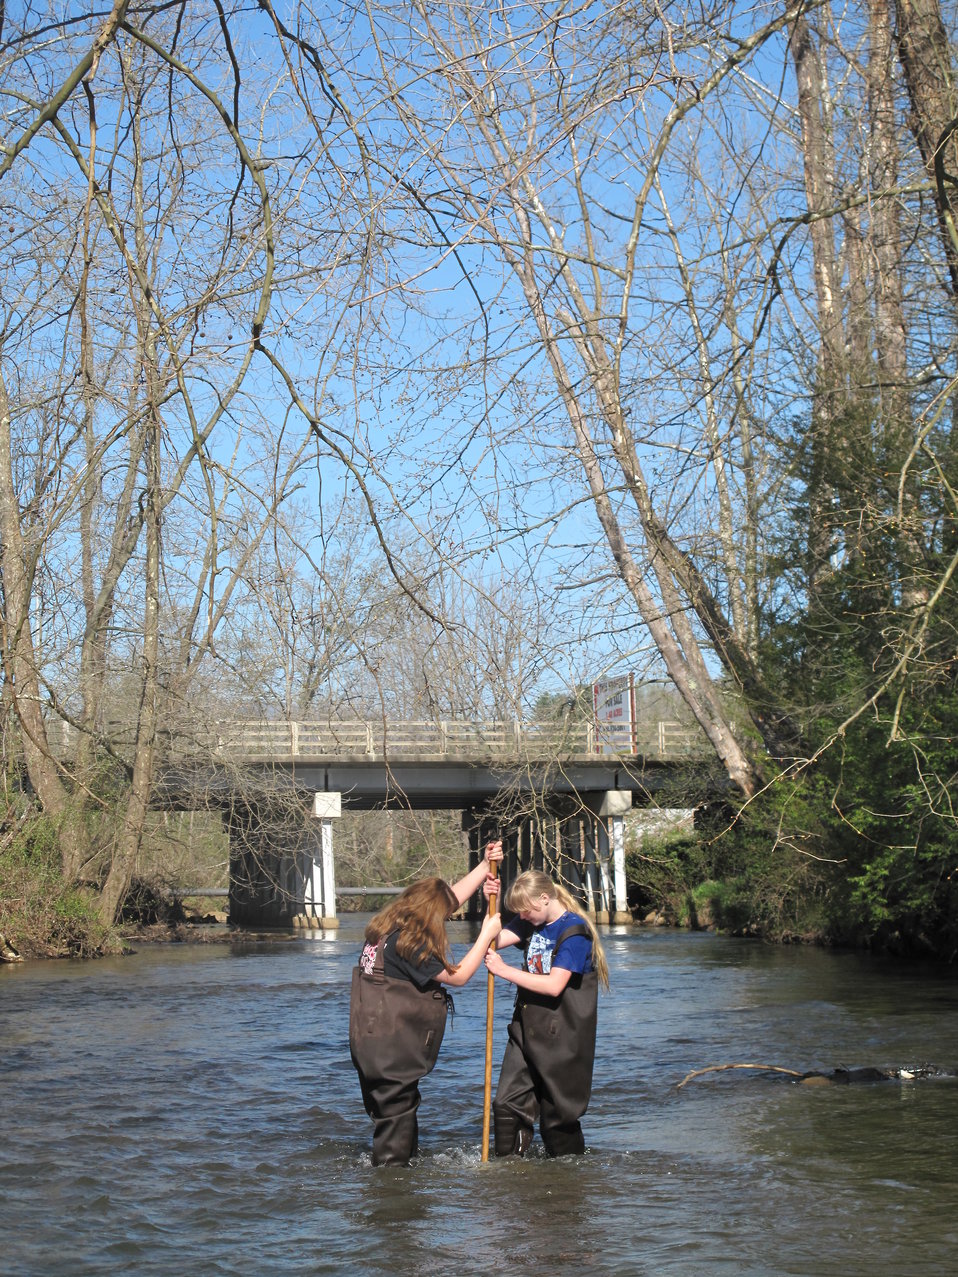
Pair of students checking their D-net

Over the course of four days in late April 2014, every eighth grade student at North Carolina’s Macon Middle School, Highlands School, Nantahala School, and Trimont Christian Academy visited Cartoogechaye Park, in Macon County, to learn about rivers.

The students rotated through four stations:
1) water chemistry where they had the opportunity to help test water from Cartoogechaye Creek to gain an idea of the stream’s water quality;
2) aquatic insects, where students collected and identified animals like mayflies and caddisflies, learning how life in the river reflects the health of the river
3) fish, where they were able to collect and identify fish in the stream, and then
4) stream flow, where they measured and calculated the downstream movement of water, including the velocity of the water and the total volume of water being moved per second.

The event was organized by the University of Georgia's Coweeta Long-Term Ecological Research (LTER) Program, which is based at the USFS Coweeta Hydrologic Laboratory. (coweeta.uga.edu/), with sizable support from the Land Trust for the Little Tennessee. Other supporters include the U.S. Fish and Wildlife Service, N.C. Natural Heritage Program, and N.C. Division of Water Resources.